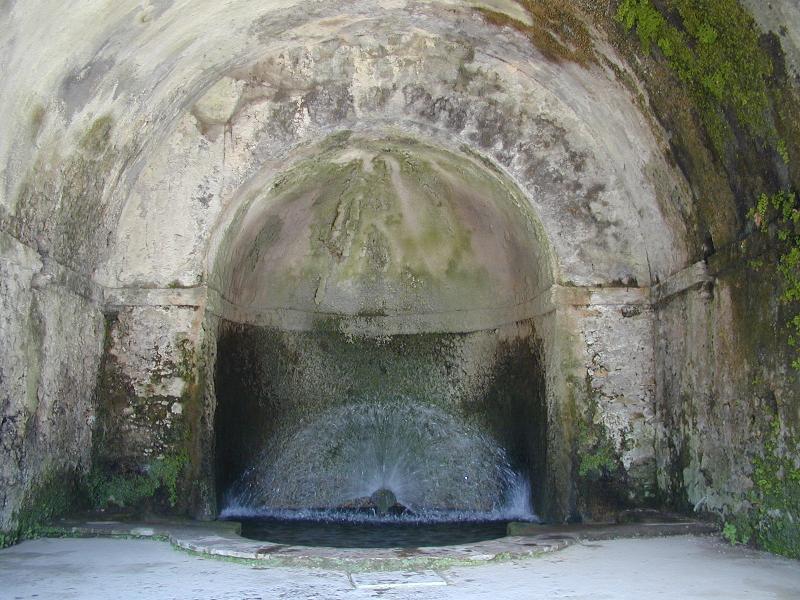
000910 tivoli v d este 35 ninfeo